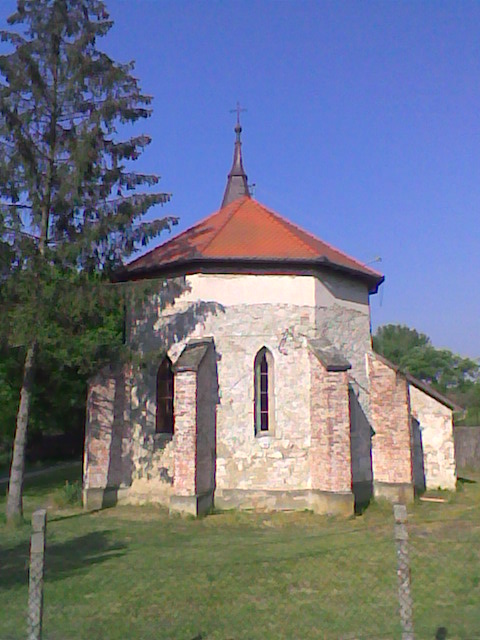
Magyar: A tiszasülyi Szent László-templom